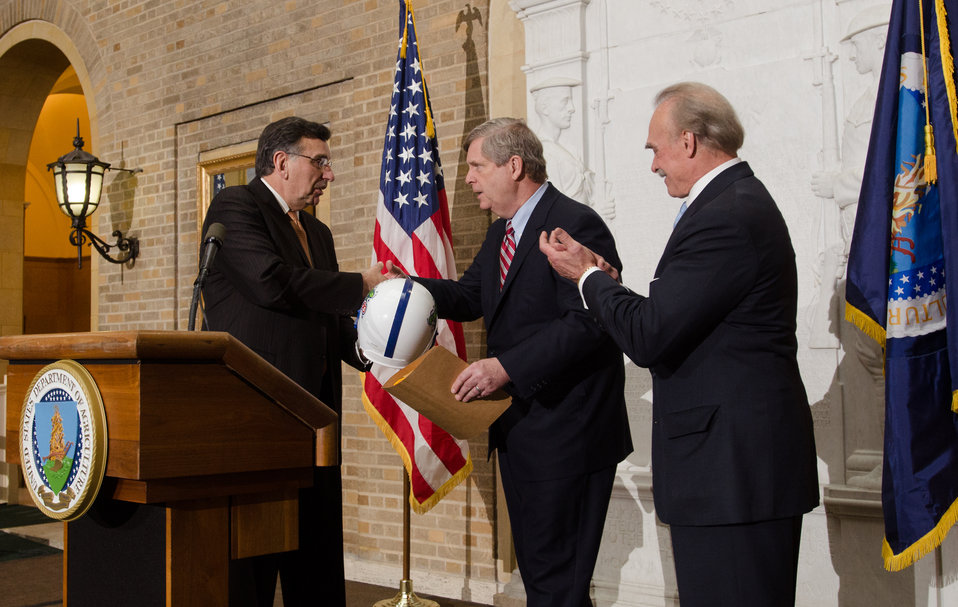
Dairy Management, Inc., (DMI) Chief Executive Officer Tom Gallagher presents Agriculture Secretary Tom Vilsack with a National Football League Fuel Up to Play 60 helmet for the work that the U.S. Department of Agriculture (USDA) has done in support of the dairy industry at a luncheon at the Whitten Building Patio, in Washington, D.C. on Tuesday, Feb. 26, 2013.